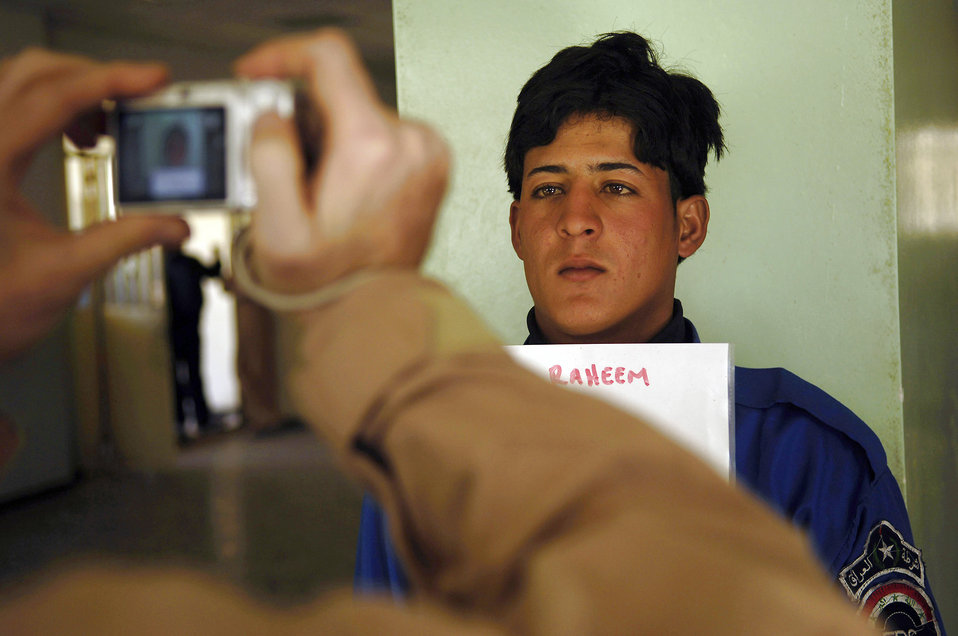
Airmen improve Iraq's security

Tech. Sgt. Justin Duncan photographs an Iraqi police officer to be entered into a database Feb. 23 at Rasheed, Iraq. Sergeant Duncan is assigned to Det. 3, 732nd Expeditionary Security Forces Squadron from Sather Air Base, Iraq, and is deployed from the 341st Security Forces Squadron at Malmstrom Air Force Base, Mont.